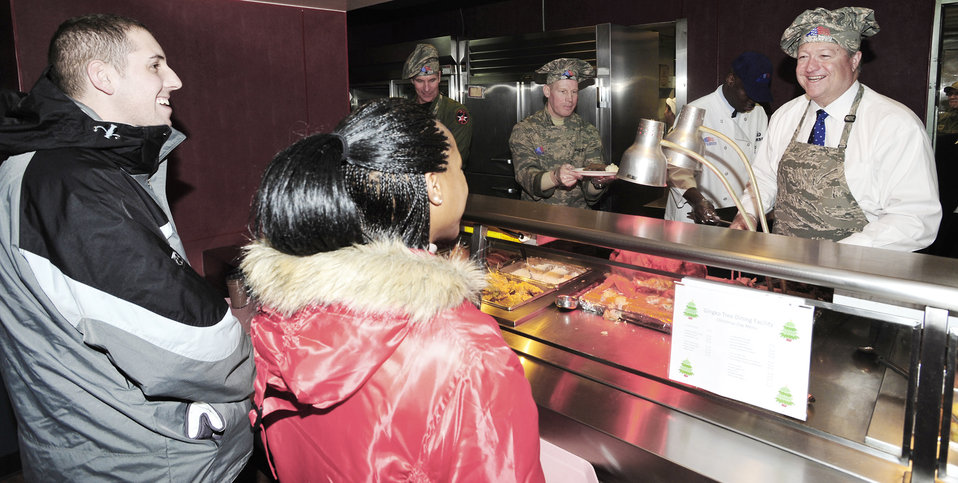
Secretary of the Air Force spends Christmas with Airmen in Korea

Secretary of the Air Force Michael B. Donley serves Christmas Day dinner at the Gingko Tree Dining Facility at Osan Air Base, South Korea. Secretary Donley met with Airmen assigned to the 51st Fighter Wing, 8th Fighter Wing, 7th Air Force and South Korean airmen during his two-day trip to the peninsula.